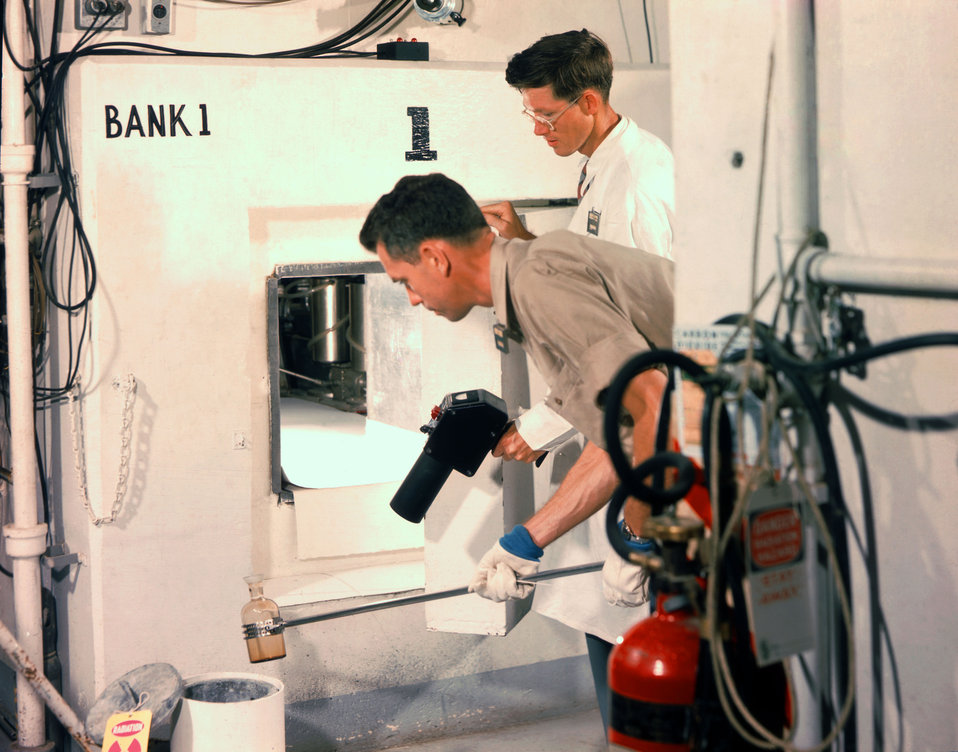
Isotope Shipment Oak Ridge

58-1216c DOE photo by Ed Westcott 1958 Oak Ridge Tennessee